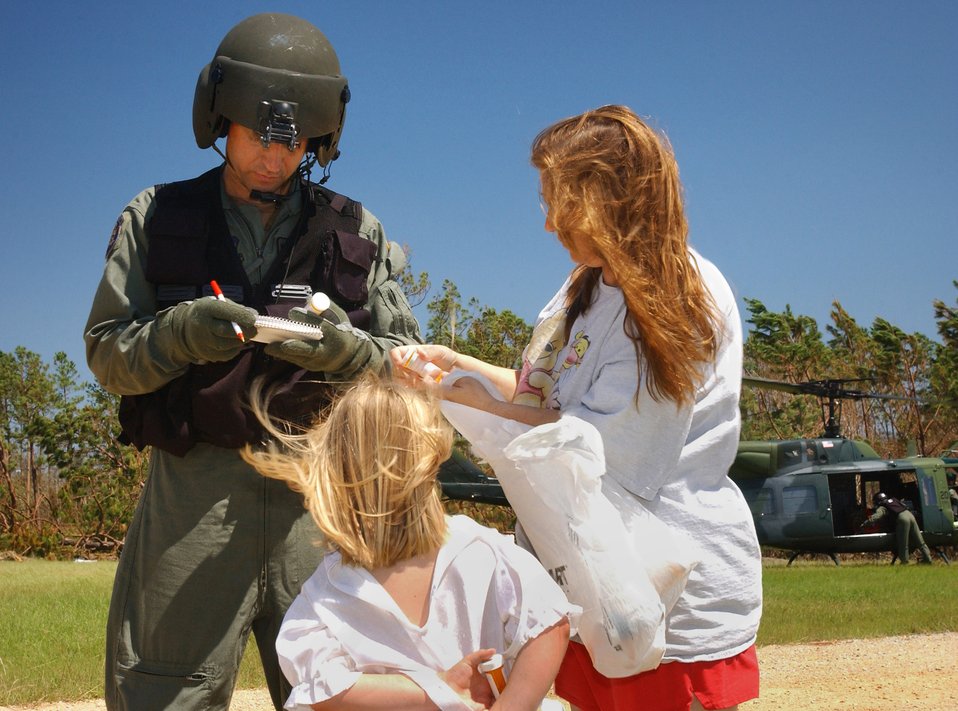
Hurricane Katrina

MISSISSIPPI (AFPN) -- Master Sergeant Curtis Kinnick copies prescription information from a mother and daughter in need of refills as a result of Hurricane Katrina. Sergeant Kinnick is part of a UH-1N Huey helicopter crew that flies to outlying areas of southern Mississippi delivering baby supplies, food, water and medical attention to people affected by Hurricane Katrina. Air Force Space Command deployed eight Hueys to support Joint Task Force-Katrina. Sergeant Kinnick is a medical technician with the 620th Air Expeditionary Squadron and is from Columbus Air Force Base, Miss.